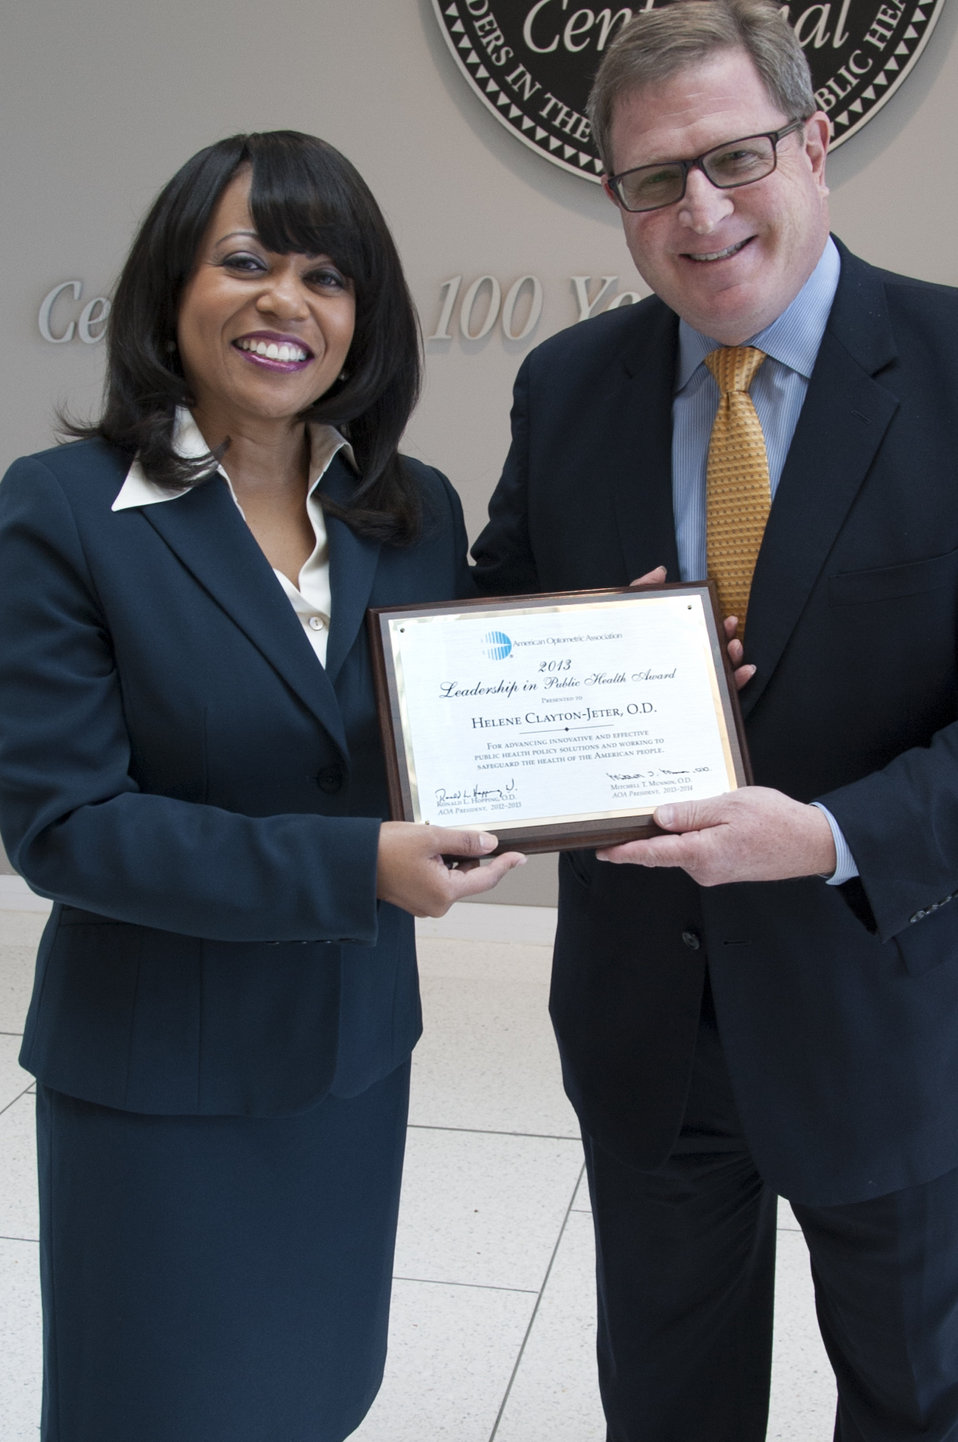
AOA Leadership Award - 9845

Nov. 18, 2013; Dr. Helene Clayton-Jeter (left) accepted The American Optometric Association (AOA) 2013 Leadership in Public Health Award from AOA Director Jon Hymes, for her hard work and success in advancing innovative and effective public health policy solutions, and for helping safeguard the health of the American people.

For more information on Helene's award, read this FDA Voice blog post: blogs.fda.gov/fdavoice/index.php/2013/12/a-vision-worth-h...

This photo is free of all copyright restrictions and available for use and redistribution without permission. Credit to the U.S. Food and Drug Administration is appreciated but not required. Privacy and use information: www.flickr.com/people/fdaphotos/